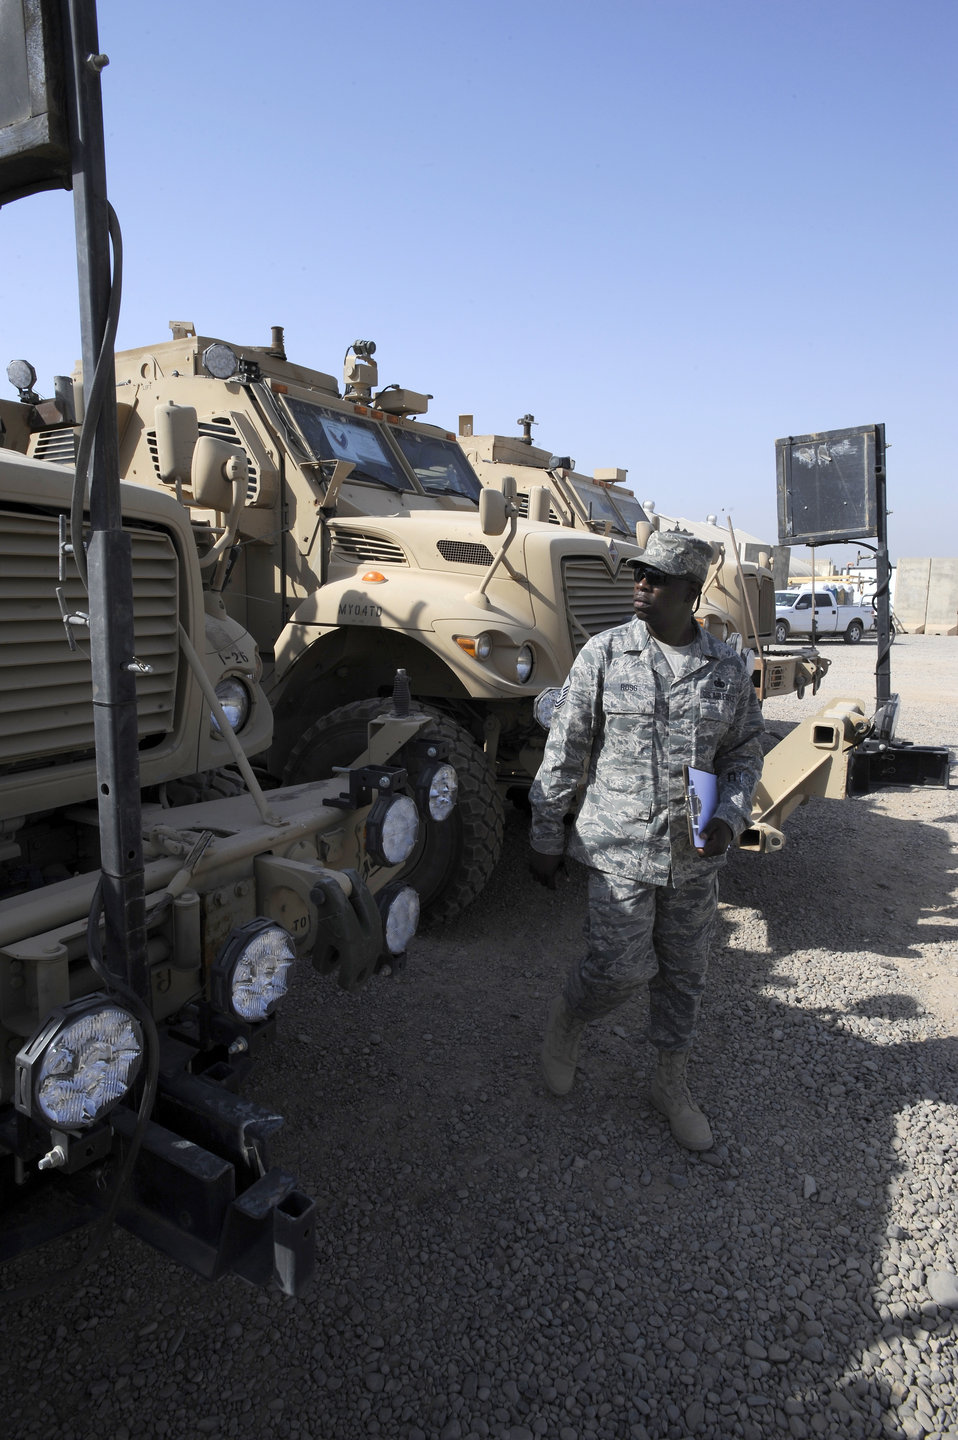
Airmen help clear the battlefield

Master Sgt. Ezekiel Ross does a routine walk around on a set of mine-resistant, ambush-protected vehicles June 16, 2010, at the Redistribution Property Assistance Team Yard, Joint Base Balad, Iraq. The Airmen and Soldiers working at the RPAT yard log and inspect equipment as small as laser pointers, which are processed, wrapped, and boxed, to MRAPs which are parked in the yard awaiting transportation. Sergeant Ross is assigned to the 732nd Expeditionary Logistics Readiness Squadron.